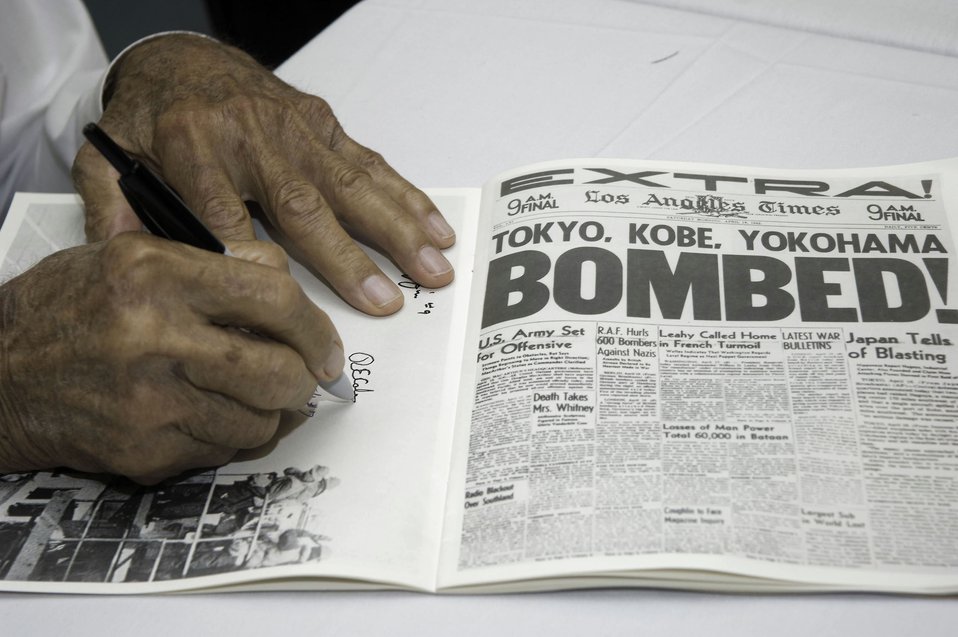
Raiders meet in Florida

Lt. Col. Robert E. Cole autographs a photograph of his B-25 Mitchell during the Doolittle Raiders homecoming event May 30 in Fort Walton Beach, Fla. Then Lt. Cole was the co-pilot for the first bomber crew to take-off during Doolittle's mission over Tokyo.